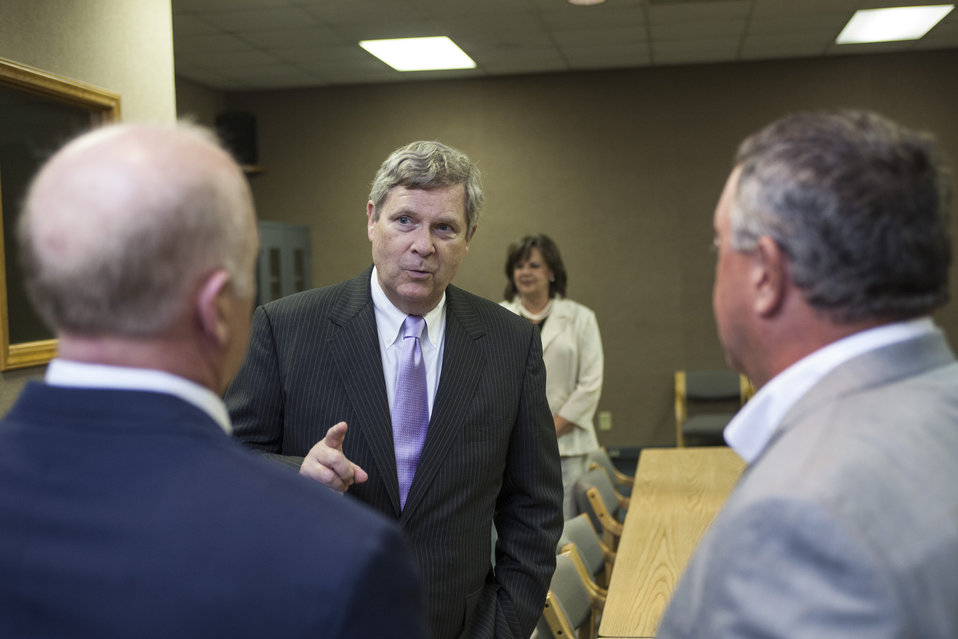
Agriculture Secretary Tom Vilsack tours Domtar Inc. in Plymouth, NC on Friday, Aug. 15, 2013. Domtar produces lignin, a biobased material with the potential to create advanced new products and energy. Domtar is working with a number of partners, including the U.S. Forest Products Laboratory, on development of lignin applications that includes fuel additives, solid fuels, high performance adhesives and more. The U.S. Department of Agriculture (USDA) through a Biomass Research and Development Initiative funding s is the first of its type to open in the U.S. in more than 25 years.